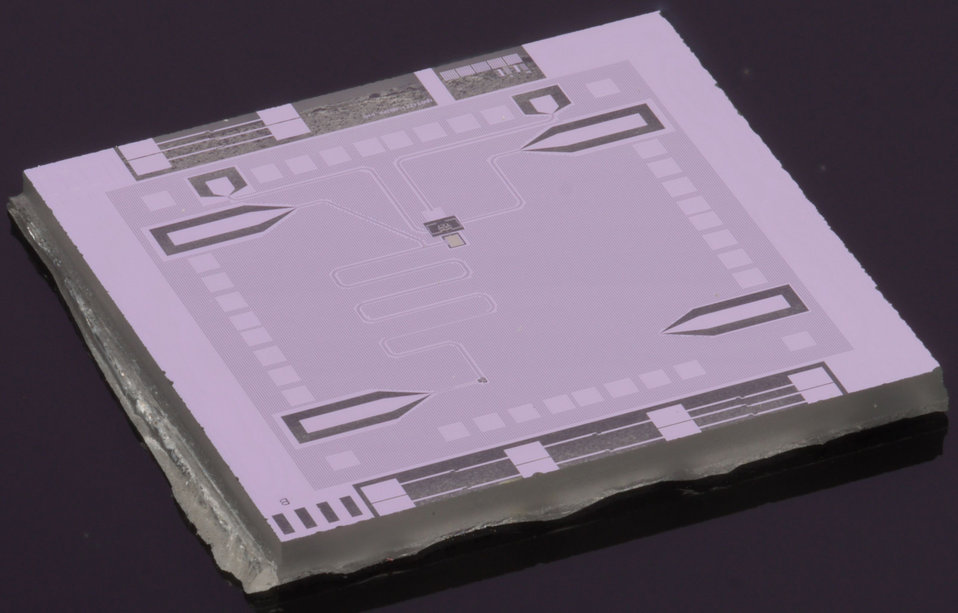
Optics

NIST's 'optics table on a chip' is a superconducting circuit on a square sapphire chip about 6 millimeters wide. Scientists use the chip to place a single microwave photon in two frequencies, or colors, at the same time. The photon is prepared by an 'artificial atom' (small yellow square) in the middle of the chip. The arrow shape at the lower left connects to a transmission line used to tune the SQUID (small black area near the point of the arrow). The SQUID couples together two resonant frequencies of the cavity (meandering line), and the photon oscillates between different superpositions of those frequencies.